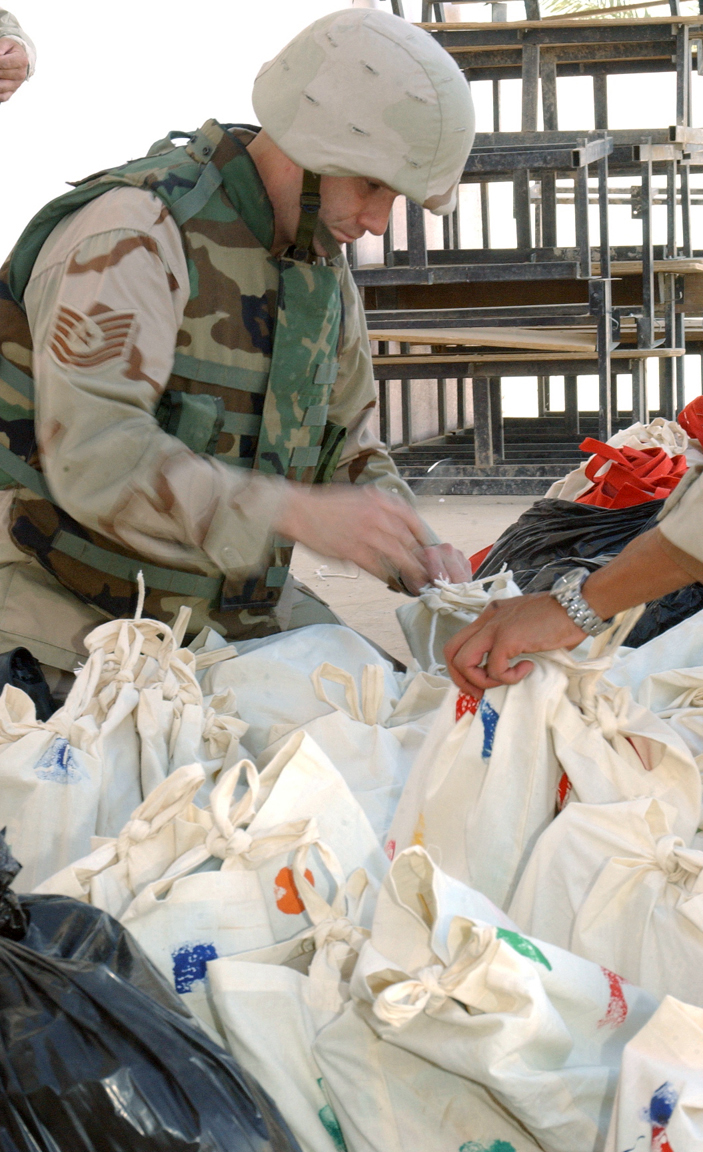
Airmen take part in Operation Pencil Box

NEAR BALAD AIR BASE, Iraq -- Tech. Sgt. Dennis Wilson organizes school supplies for a visit to a local elementary school here Oct. 24. The visit was part of Operation Pencil Box, a humanitarian project to deliver school supplies to Iraqi children. Sergeant Wilson is assigned to the 332nd Air Expeditionary Wing command post at the air base.